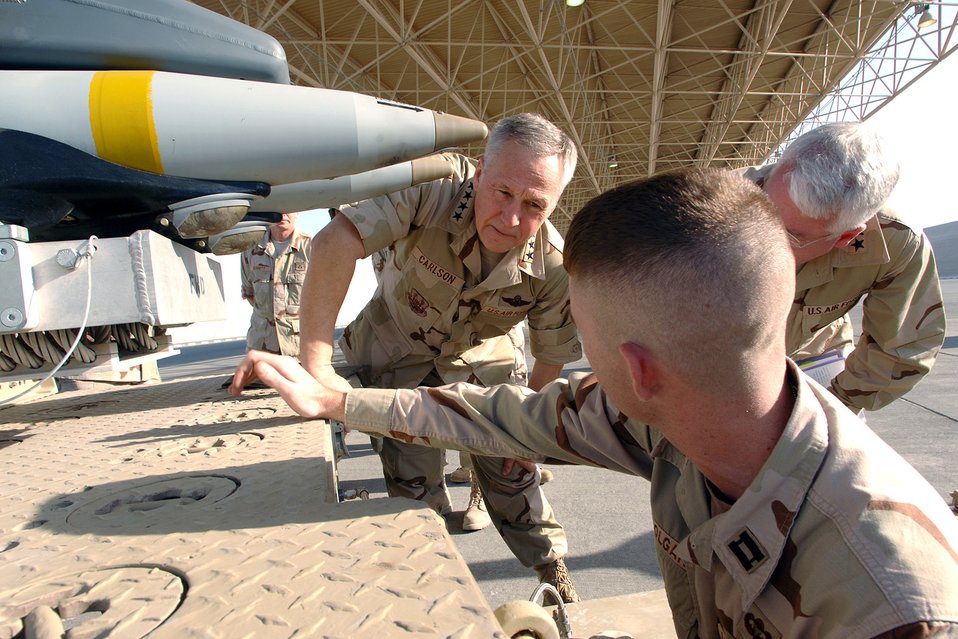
AFMC commander visits Southwest Asia

Gen. Bruce Carlson and Maj. Gen. Arthur B. Morrill III tour a desert base where they are briefed by Capt. Shad Colgate on the functionality of the Air Force's newest munition -- the 250-pound small diameter bomb on a Jan. 24 visit to Southwest Asia. General Carlson is the commander of Air Force Materiel Command. General Morrill is the AFMC Logistics Director. Captain Colgate is deployed from Lakenheath Air Base, England, as officer in charge of the 494th Expeditionary Maintenance Squadron's Munitions Flight.